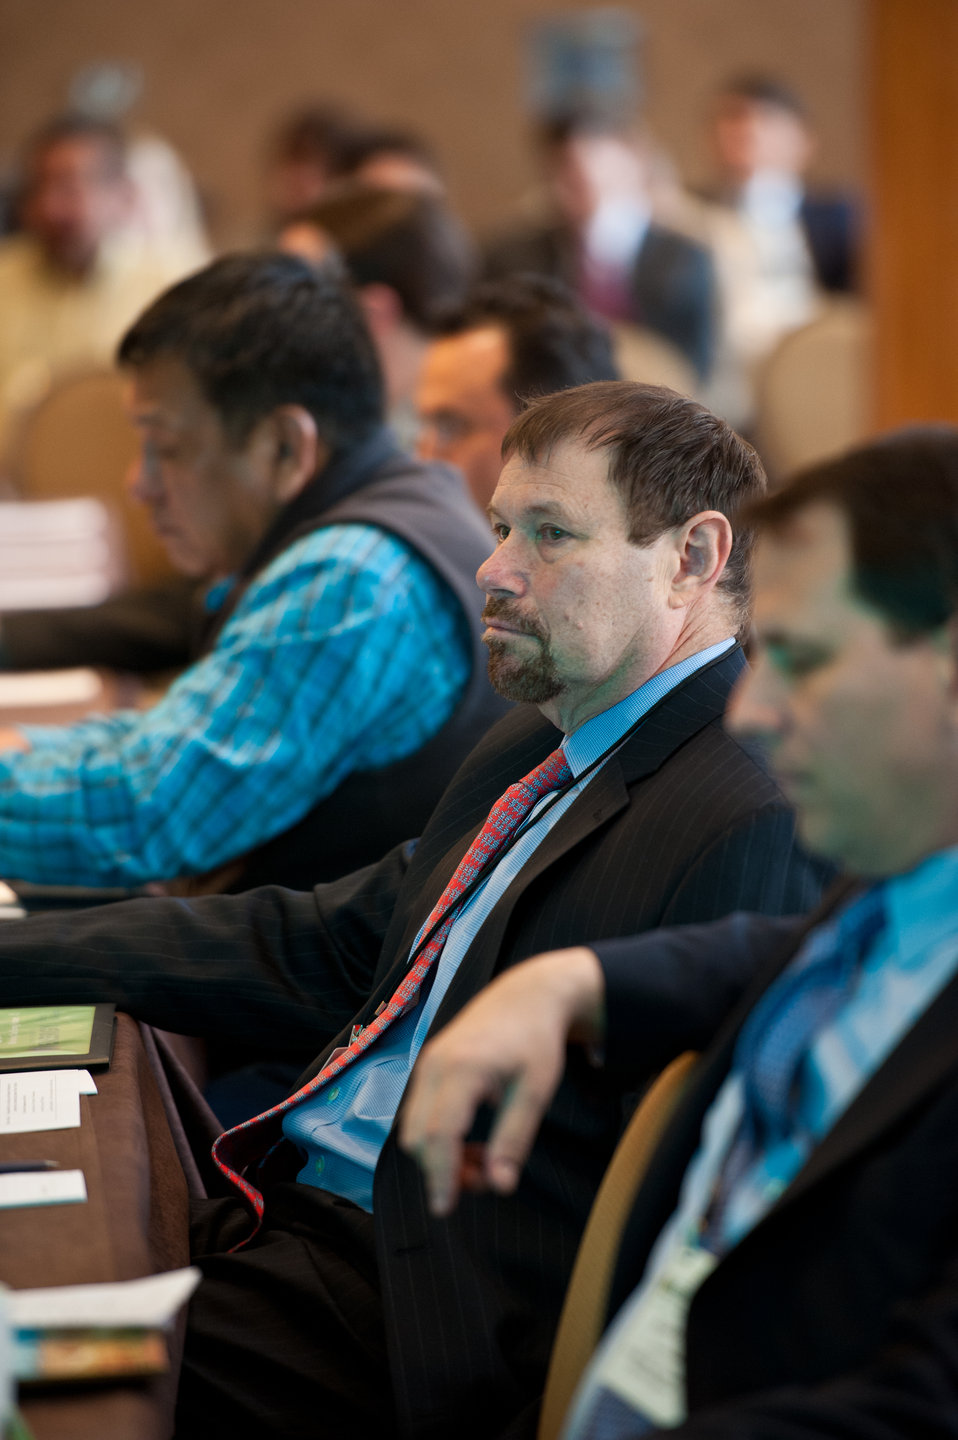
Indian Transmission Forum

February 7, 2012 - Attendees at the DOE Office of Indian Energy Tribal Leader Energy Forum on transmission held February 2012 in Denver, Colorado.